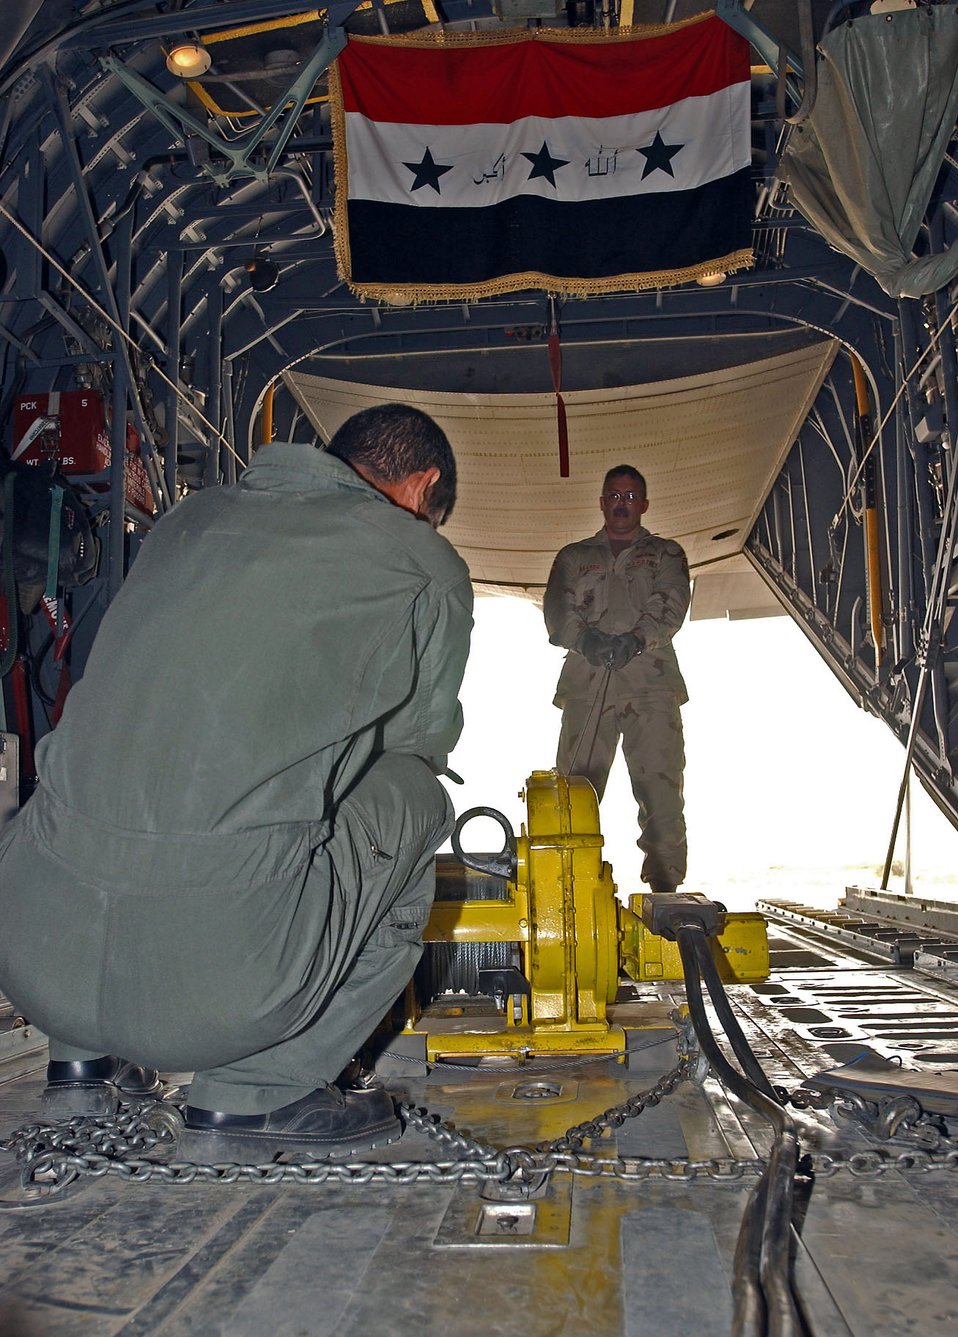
Airmen teach C-130 ops to Iraqi students, learn about sacrifice

ALI BASE, Iraq -- Senior Master Sgt. James Baarda teaches an Iraqi air force student to operate a bulldog winch used to load rolling stock cargo and equipment. He is part of a crew of more than 30 instructors teaching more than 100 Iraqi airmen how to fly and maintain C-130s here. Sergeant Baarda is a loadmaster instructor assigned to the 777th Expeditionary Airlift Squadron and is deployed from Yokota Air Base, Japan.